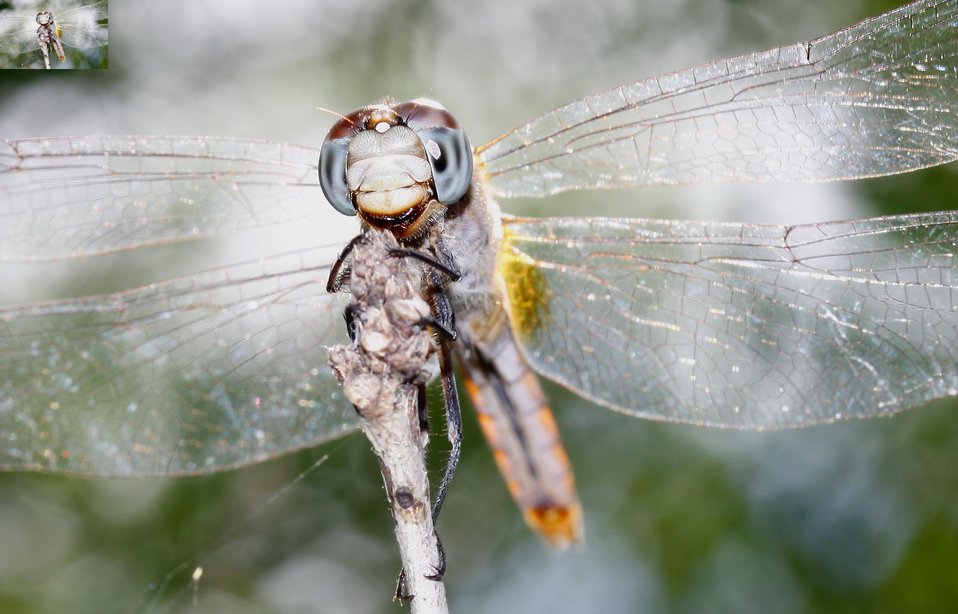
Ready for my closeup

Dragonfly, seen up close.